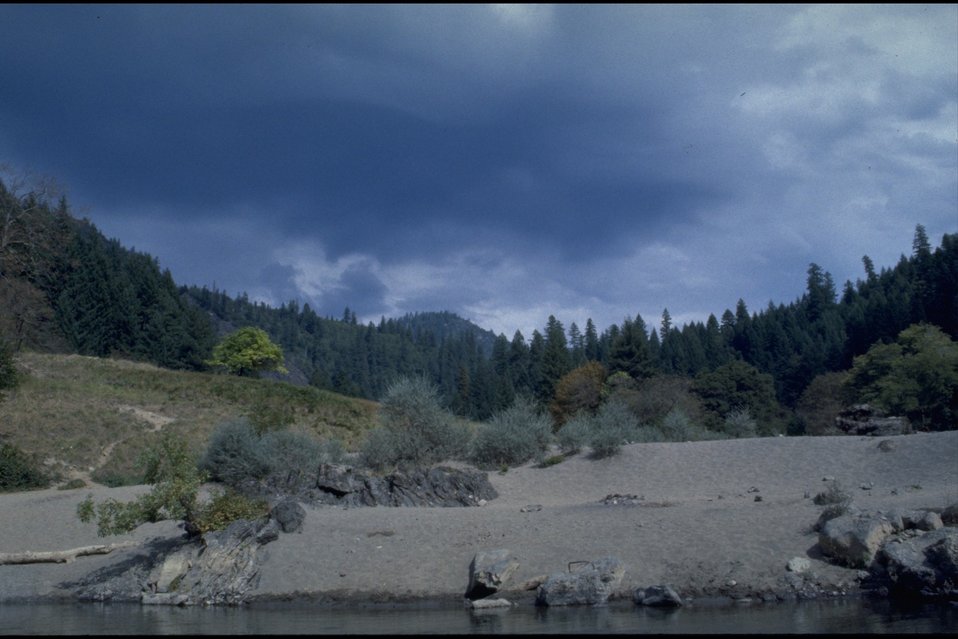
Rogue River - Mule Creek. Camp area by river and West side of Mule Creek. Wild section